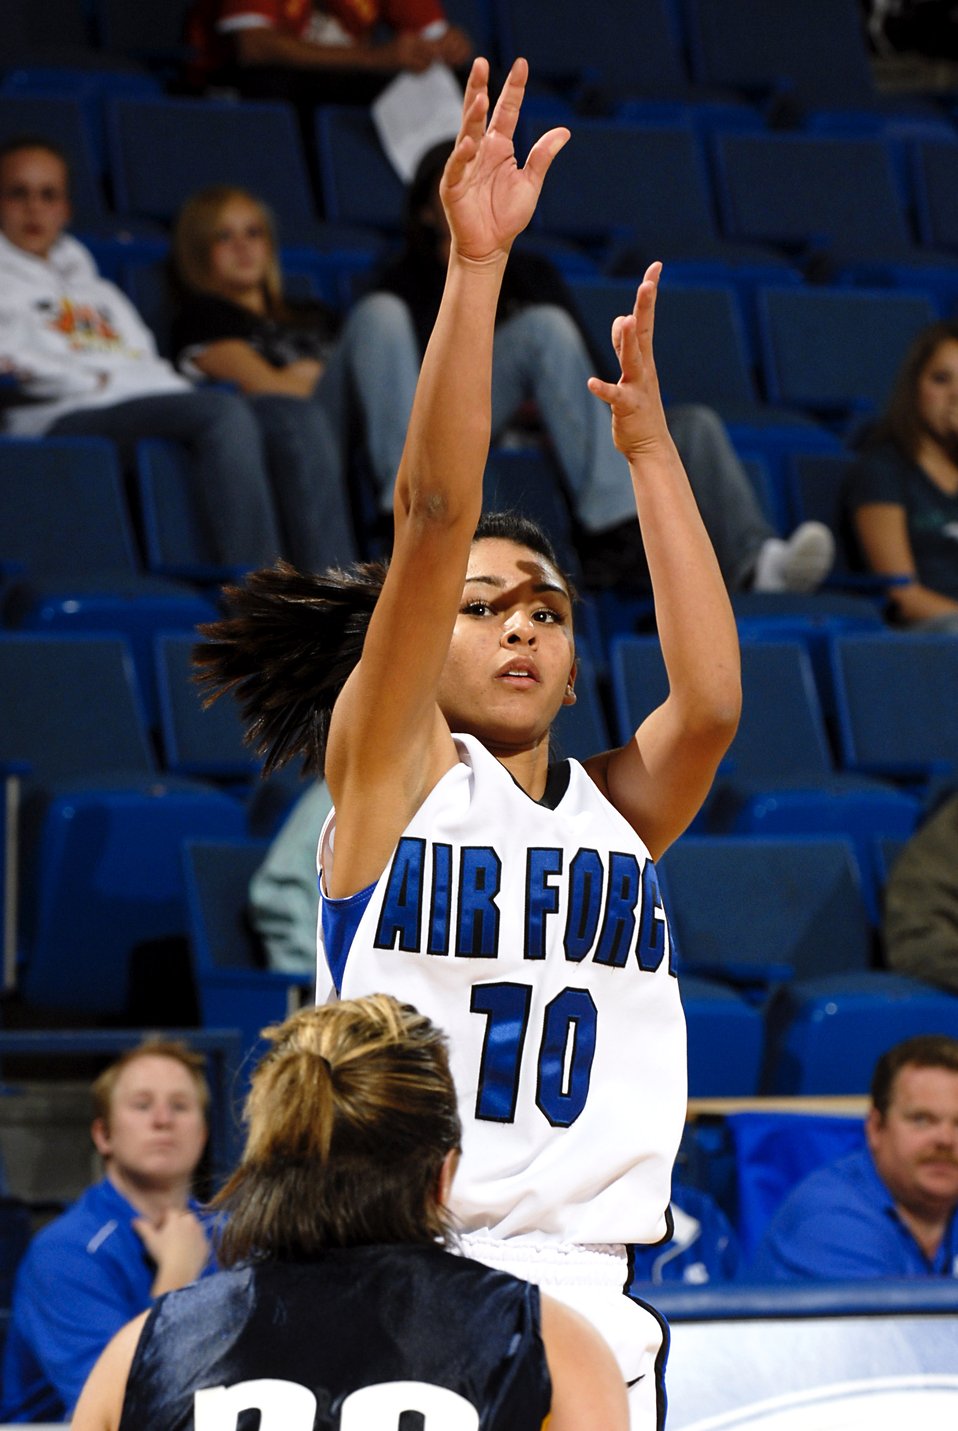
Basketball: Air Force coasts to 89-52 exhibition win over Regis

Air Force Academy freshman guard Stevie Puentes takes a jump shot above Regis University's Breanne Burley during the Falcons' 89-52 exhibition win Nov. 3 at the Academy's Clune Arena. Air Force opens its regular season Nov. 9 at Oklahoma State.